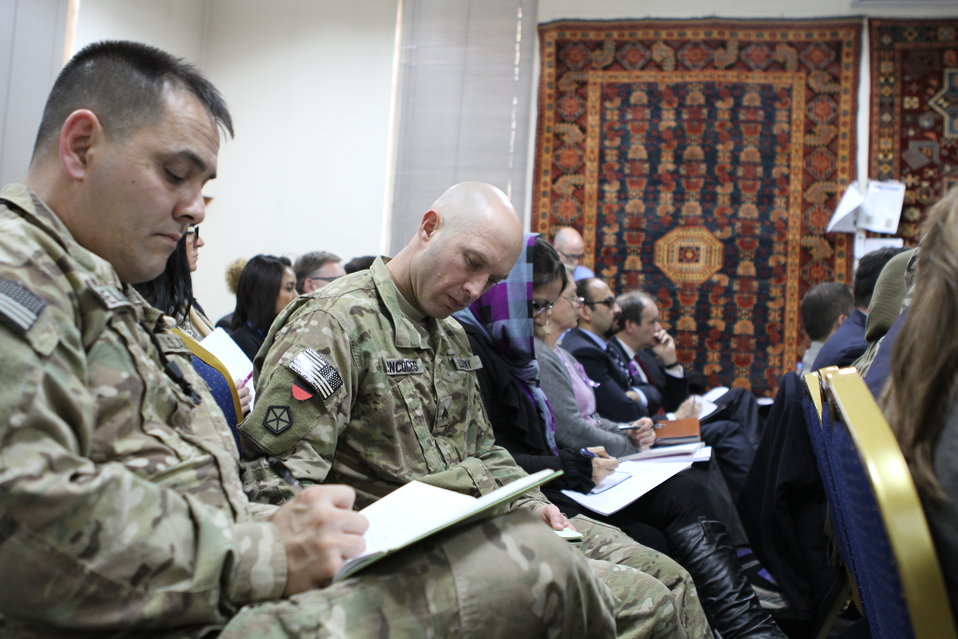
Presentation of the ACTA Civil Society analysis of the FY 1392 Afghan national budget